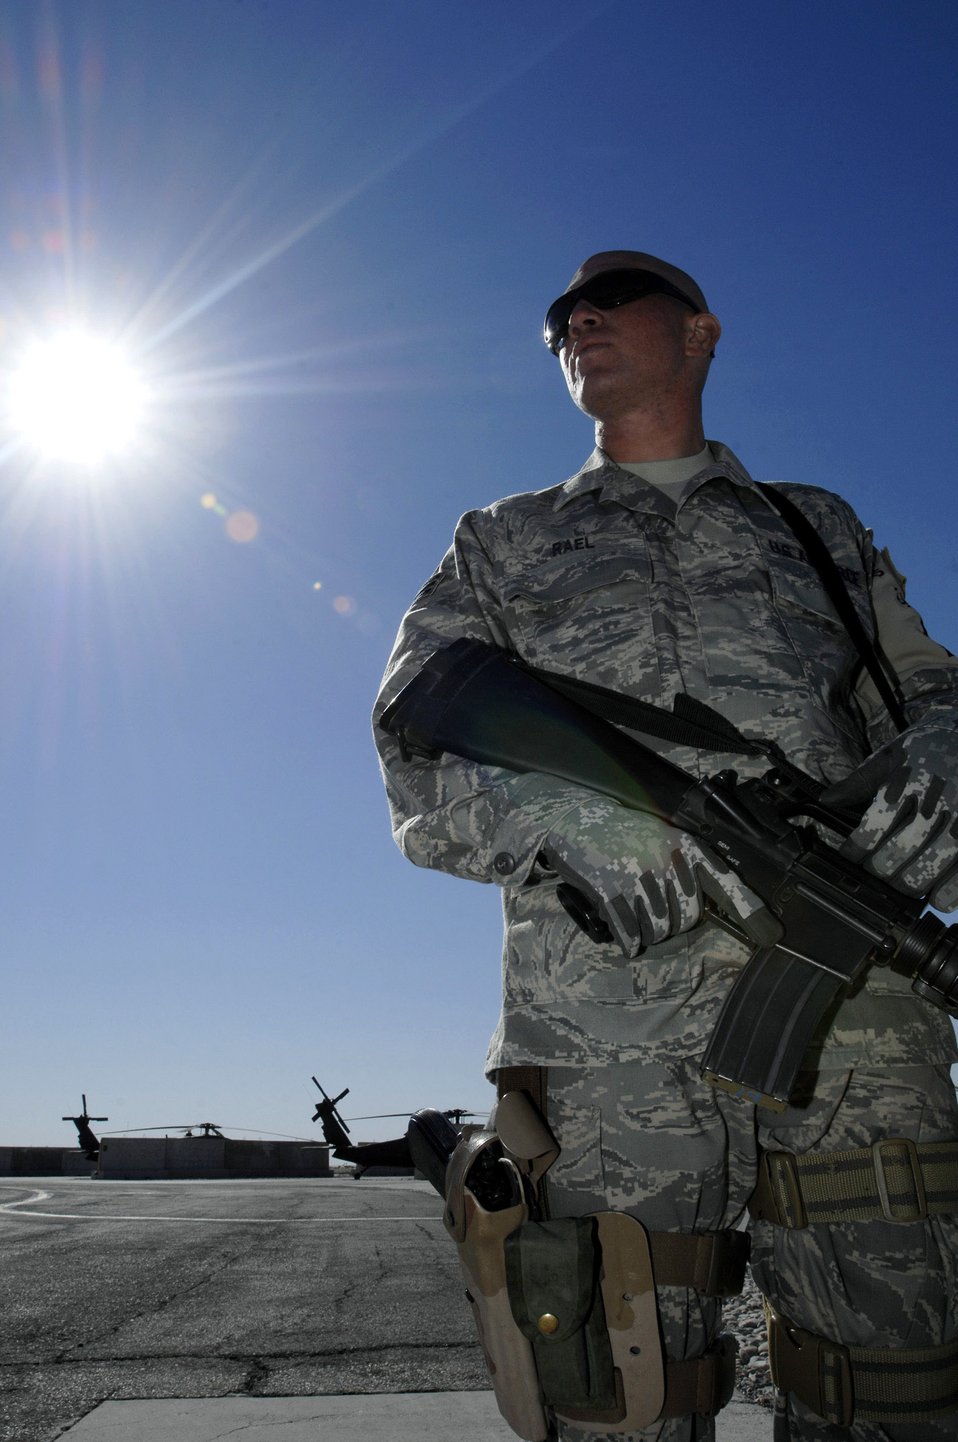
Force protection Airmen keeps vigilance in the forefront

Senior Airman Paul Rael watches local Iraqi nationals working on base Nov. 27. Airman Rael is assigned to the 407th Expeditionary Security Forces Squadron force protection and is responsible for escorting and supervising the local nationals as they work. Airman Rael is an aircraft metals technology machinist from Whiteman Air Force Base, Mo.